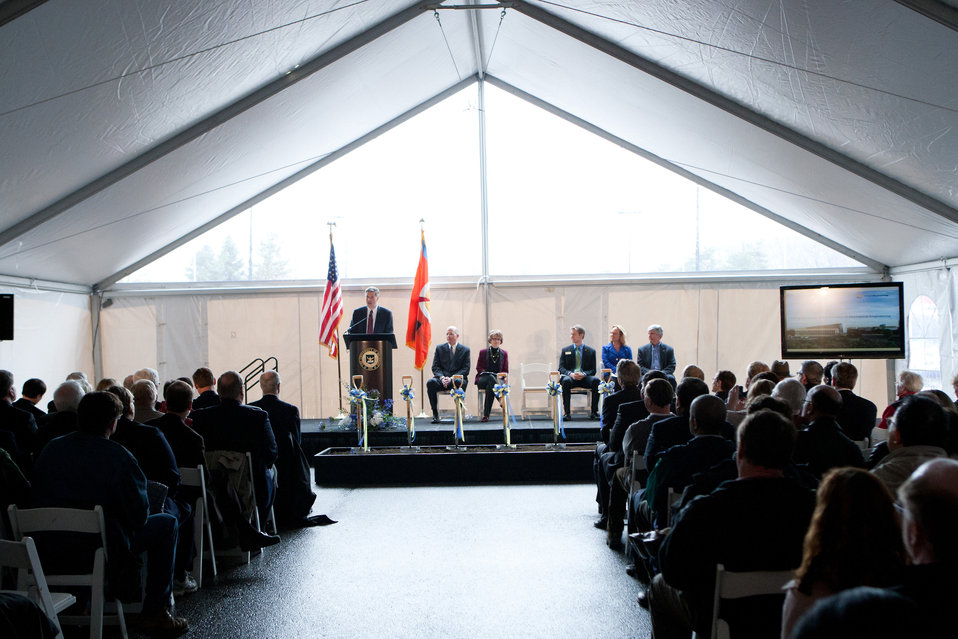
Center of Excellence in Nano Mechanical Science and Engineering Ground Breaking

NIST Director Dr. Patrick Gallagher addresses dignitaries at the groundbreaking for the University of Michigan new Center of Excellence in Nano Mechanical Science and Engineering, funded in part by a grant from NIST. Guests included Michigan Governor Rick Snyder, University of Michigan President Mary Sue Coleman, a well as University faculty, alumni and students.